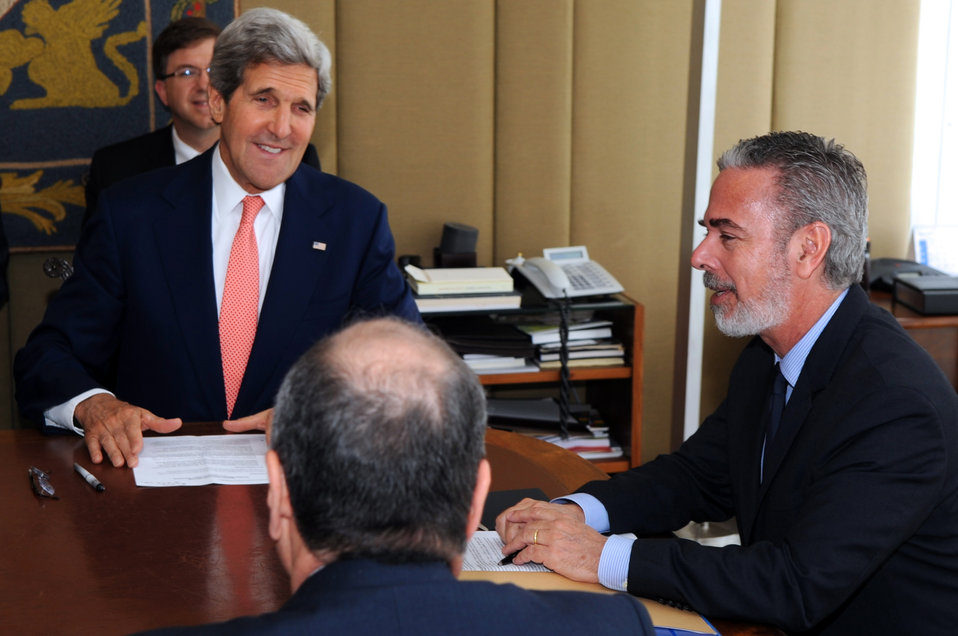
Secretary Kerry Meets With Brazilian Foreign Minister Patriota

U.S. Secretary of State John Kerry listens as Brazilian Foreign Minister Antonio Patriota speaks before a formal bilateral discussion in Brasilia, Brazil, on August 13, 2013.